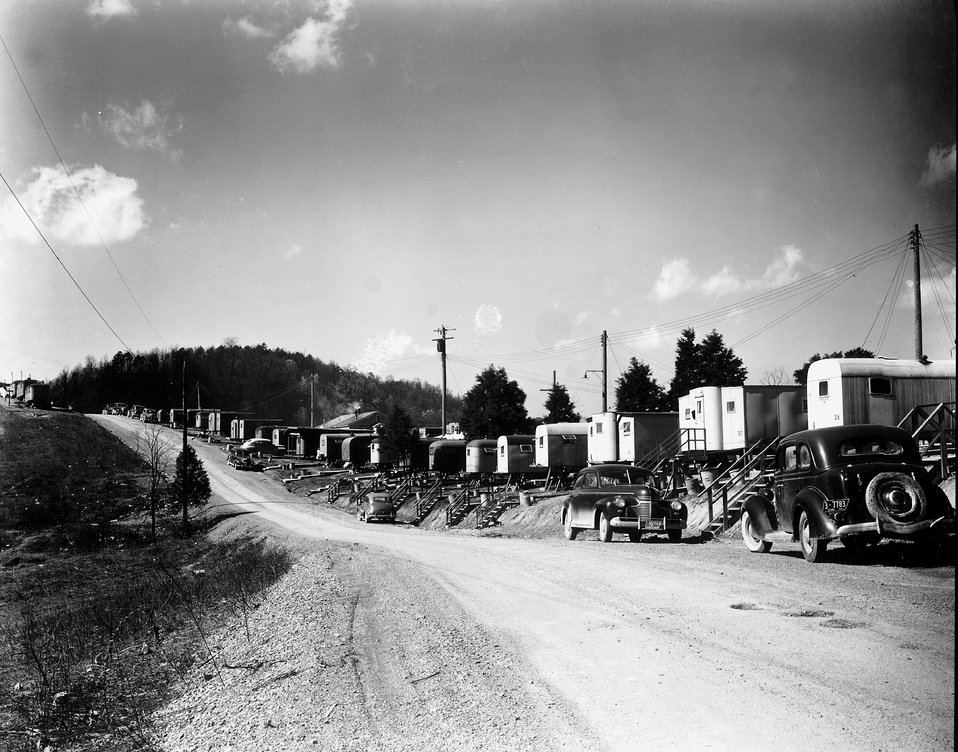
Living conditions were likened to a boom town atmosphere as families struggled to live with uncertain electricity and water supplies. One resident commented: 'We weren't born soon enough for the Gold Rush, but we made up for it at Oak Ridge.' c. 1944